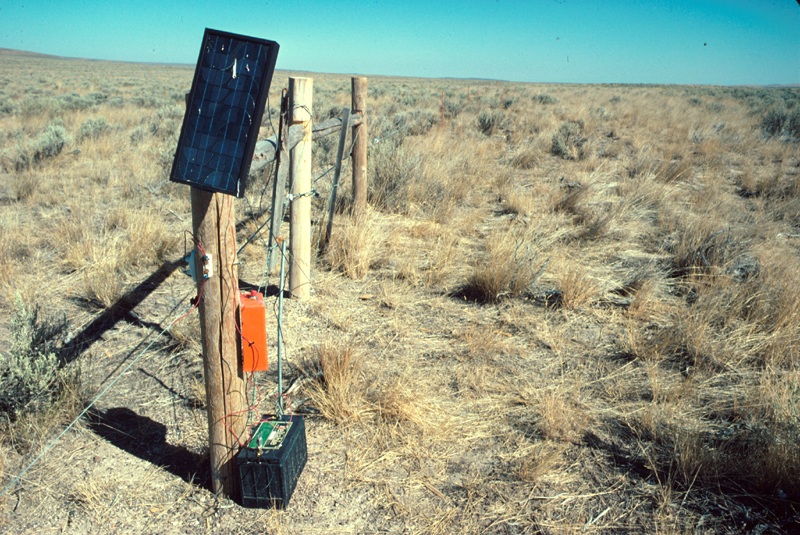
Solar Powered Electronic Fence Range Restoration Project Lower Snake River District